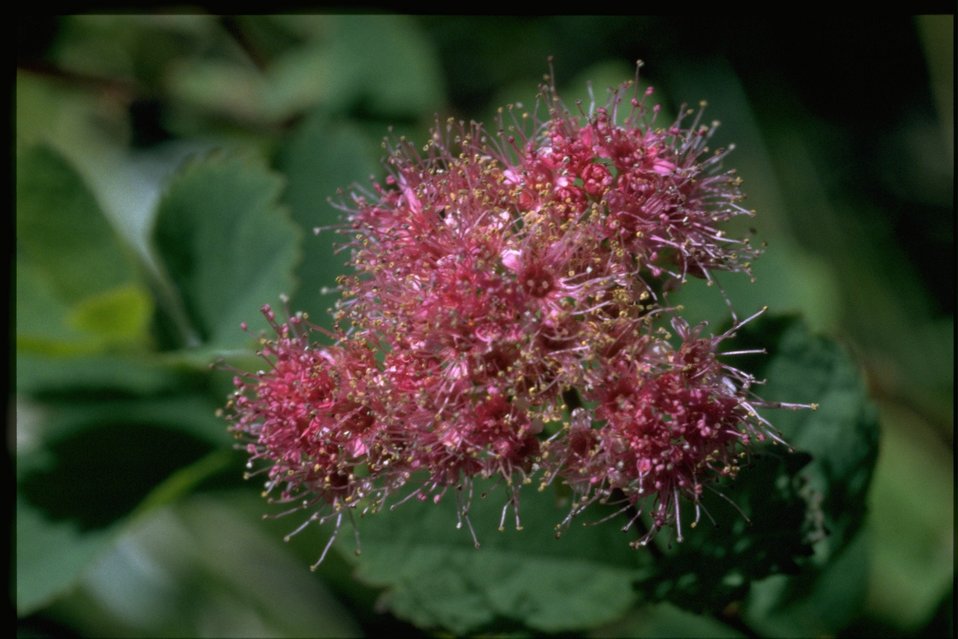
Closeup shot of Spiraea densiflora.